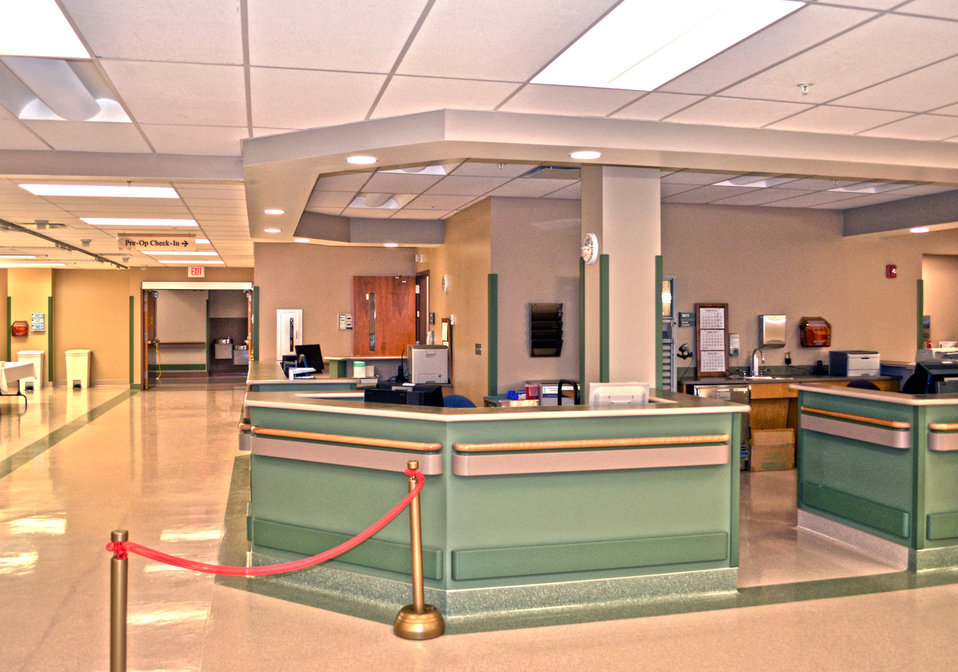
Sacramento District completes $13 million addition at VA medical facility

The new check-in area of a surgery floor addition at the Grand Junction Department of Veterans Affairs Medical Center awaits patients in Grand Junction, Colo., March 23, 2012. The U.S. Army Corps of Engineers Sacramento District’s Utah resident office managed construction of the $13 million addition, which added a 30,000-square-foot surgery floor. (U.S. Army photo illustration by Carlos J. Lazo/Released)